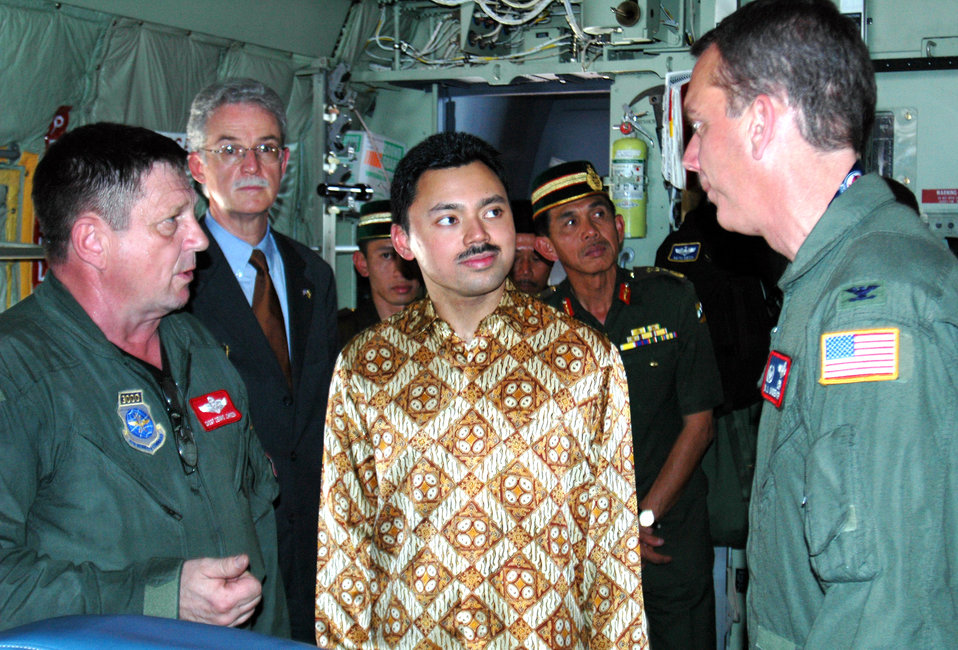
C-130J circumnavigates globe

BANDAR SERI BEGAWAN, Brunei -- Senior Master Sergeant Dennis Johnson (left) and Col. Michael Underkofler explain some of the features of the new C-130J Hercules to Deputy Sultan and Crown Prince of Brunei His Royal Highness Pg Muda Hj Al-Muhtadee Billah during their stop here Feb. 17. The crown prince spent nearly an hour in the aircraft with the crew. The crew and aircraft, from the 403rd Wing at Keesler Air Force Base, Miss., stopped in nine locations in seven countries as they circumnavigated the globe. Sergeant Johnson is a loadmaster in the wing and Colonel Underkofler is the 403 Operations Group commander.